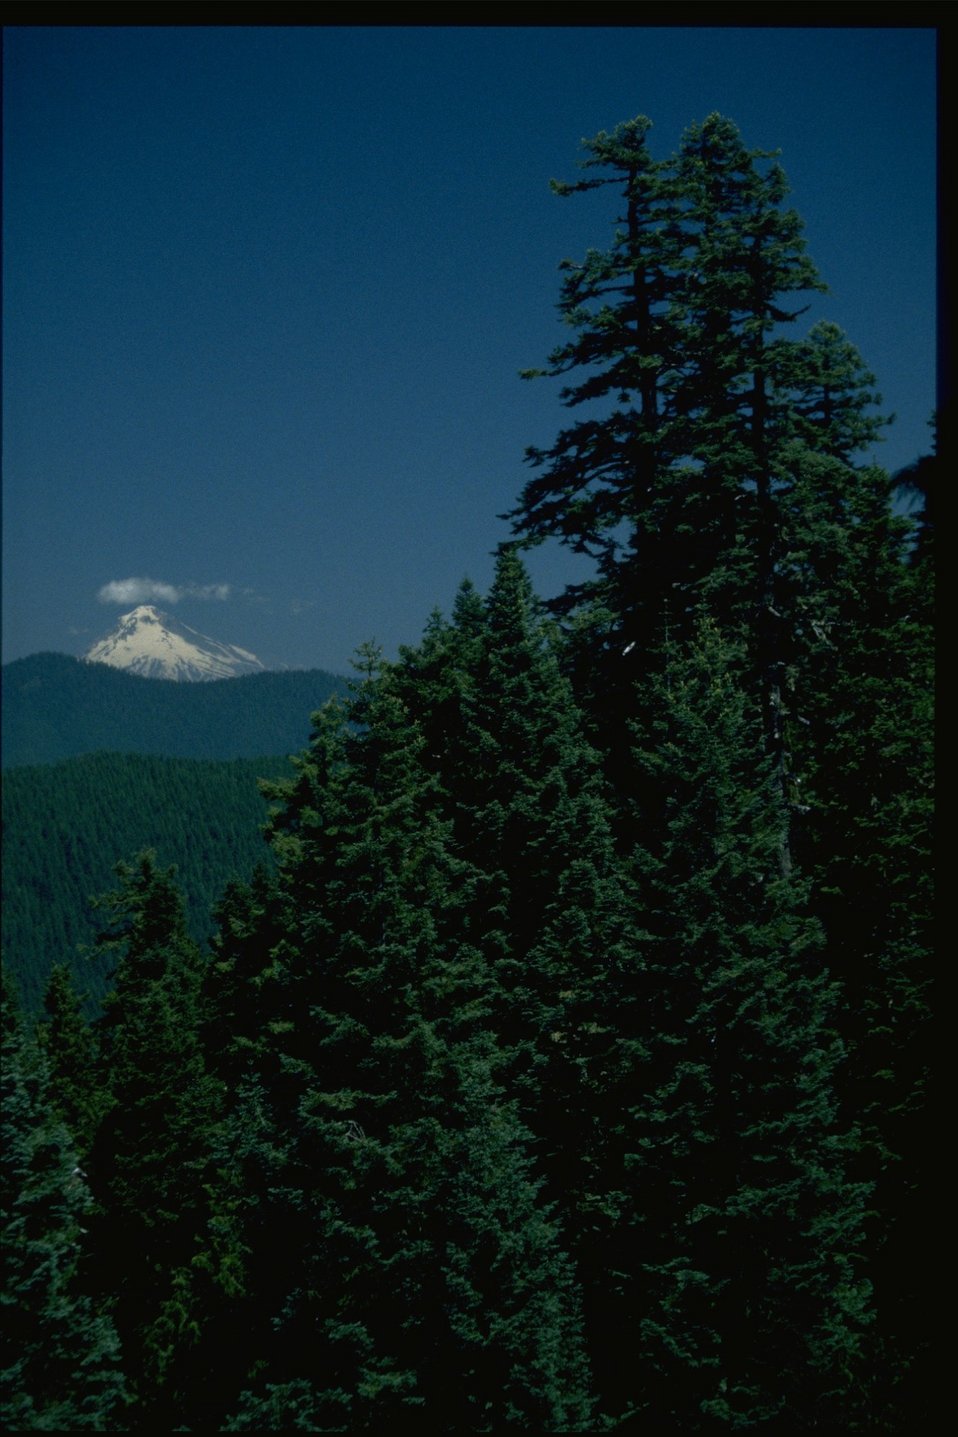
Scenic view from Mt. Horeb, Mt. Hood in the distance.